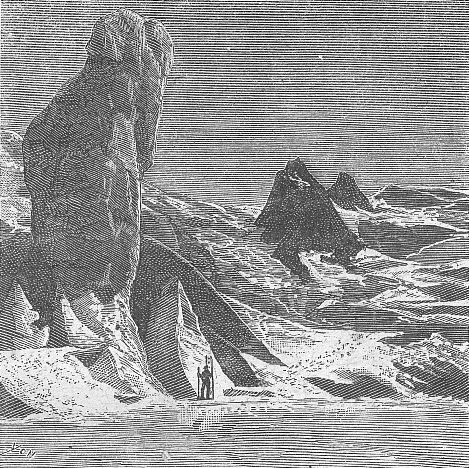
An illustration from Jules Verne's short story 'Quarantième ascension française au mont Blanc' (1871) drawn by Edmond Yon. Polski: Ilustracja opowiadania Juliusza Verne'a 'Quarantième ascension française au mont Blanc' (Czterdzieste francuskie wejście na Mont Blank , 1871) autorstwa Edmonda Yona. Français : Jules Verne: 'Quarantième ascension française au mont Blanc' (1871), dessins par Edmond Yon.